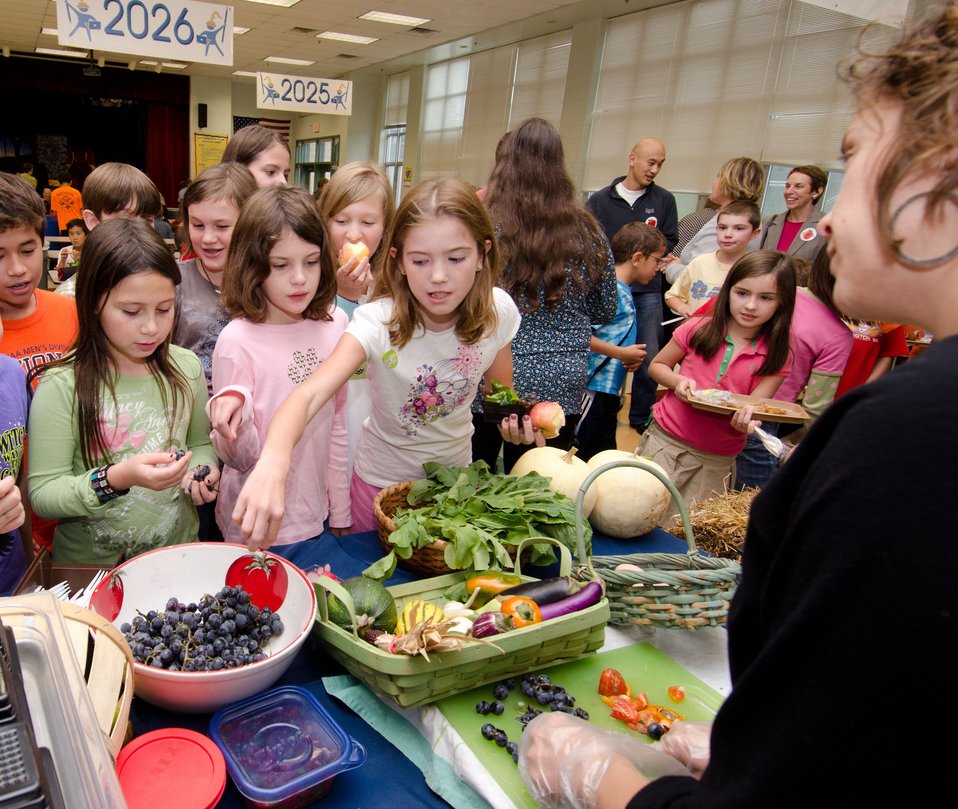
Maple Avenue Market Farm co-owner Sara Guerre invited students to learn about their local farmers, during a National School Lunch Week event at Nottingham Elementary School in Arlington, VA, on Wednesday, October 12, 2011. Farmers from Bigg Riggs Farm in Hampshire County, WV, and Maple Avenue Market Farm in Vienna, VA were very popular with the students. Today's menu included roasted chicken, roasted butternut squash with dried cranberries, farm fresh mixed lettuce salad, turkey wraps, pita wedges, hot muffins, carrots, Asian pears and more.